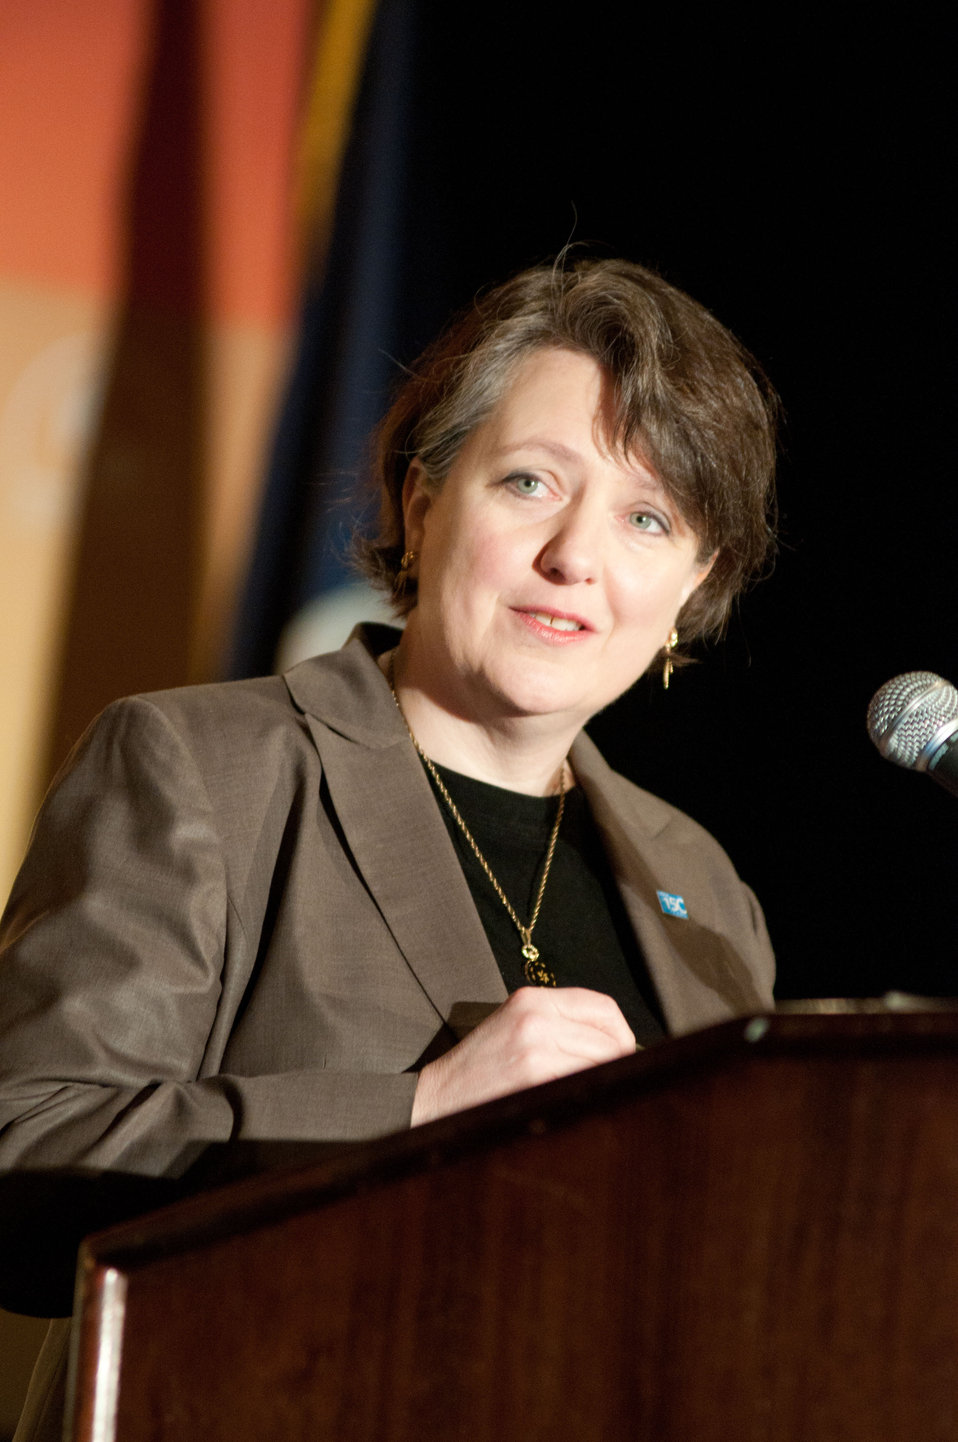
Agriculture Deputy Secretary Kathleen Merrigan makes welcoming remarks at the 2012 Agricultural Outlook Forum, “Moving Agriculture Forward” in Arlington, VA. on Thursday, February 23, 2012.